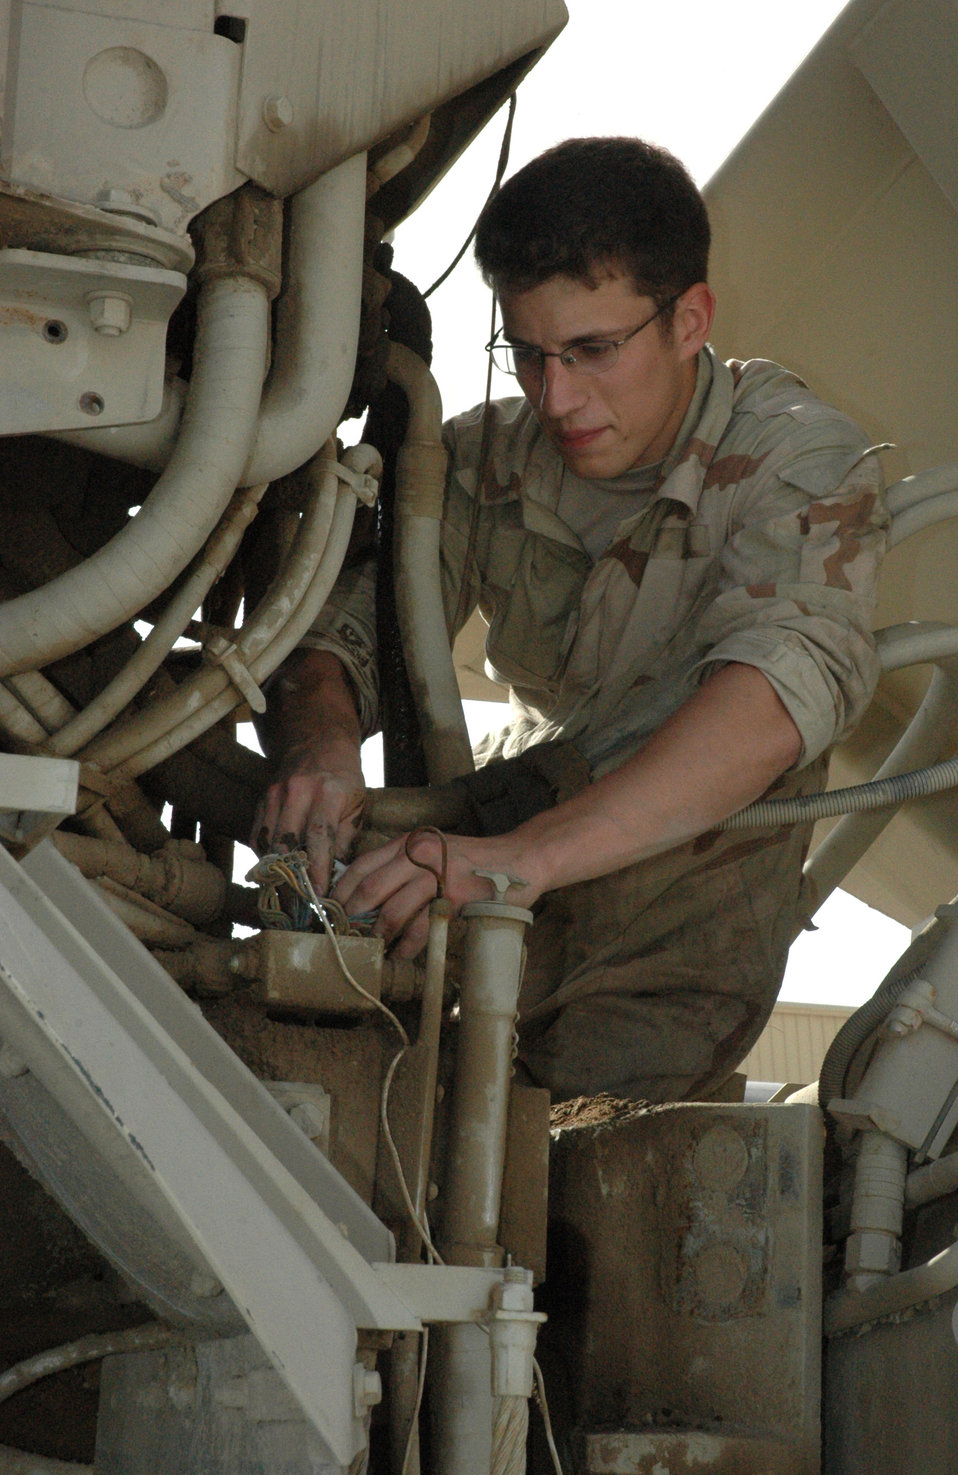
RED HORSE logistics hub supports Airmen uprange

Senior Airman Nic Skirpan inspects engine components and hydraulic fittings on a 20-ton rock dump Feb. 19 in Southwest Asia. RED HORSE vehicles from all over the area of responsibility are sent back to the 379th Air Expeditionary Wing here for maintenance and repair work. Airman Skirpan is a 1st Expeditionary Red Horse Group vehicle maintenance journeyman.